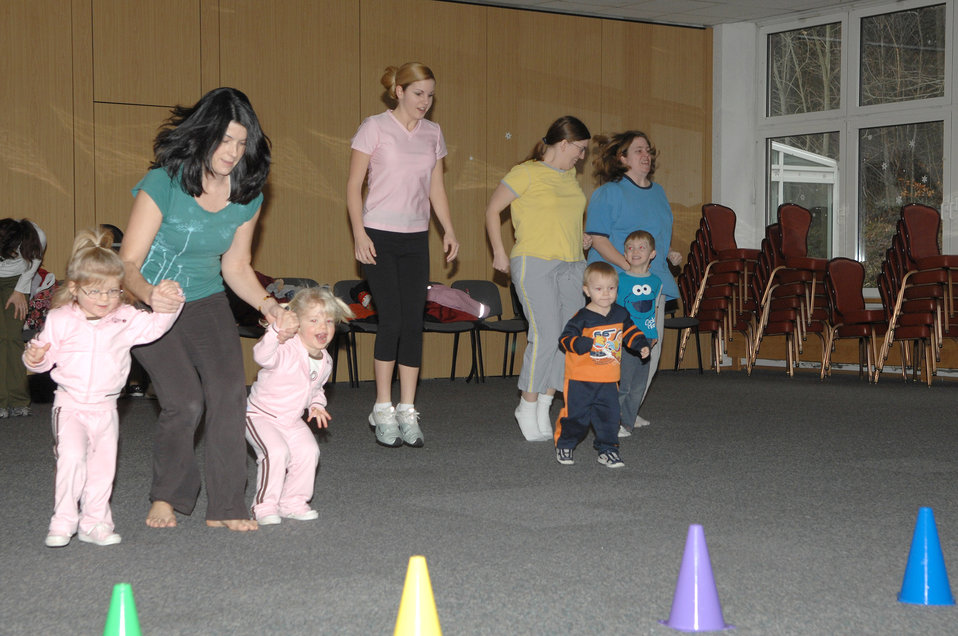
Children, parents get fit together

Kristine Toth and 2-year-old twins, Lydia and Lyla, (left), participate in a hopping activity at the Mommy and Me Fitness and Yoga class Jan.18 at the Vogelweh Community Center.